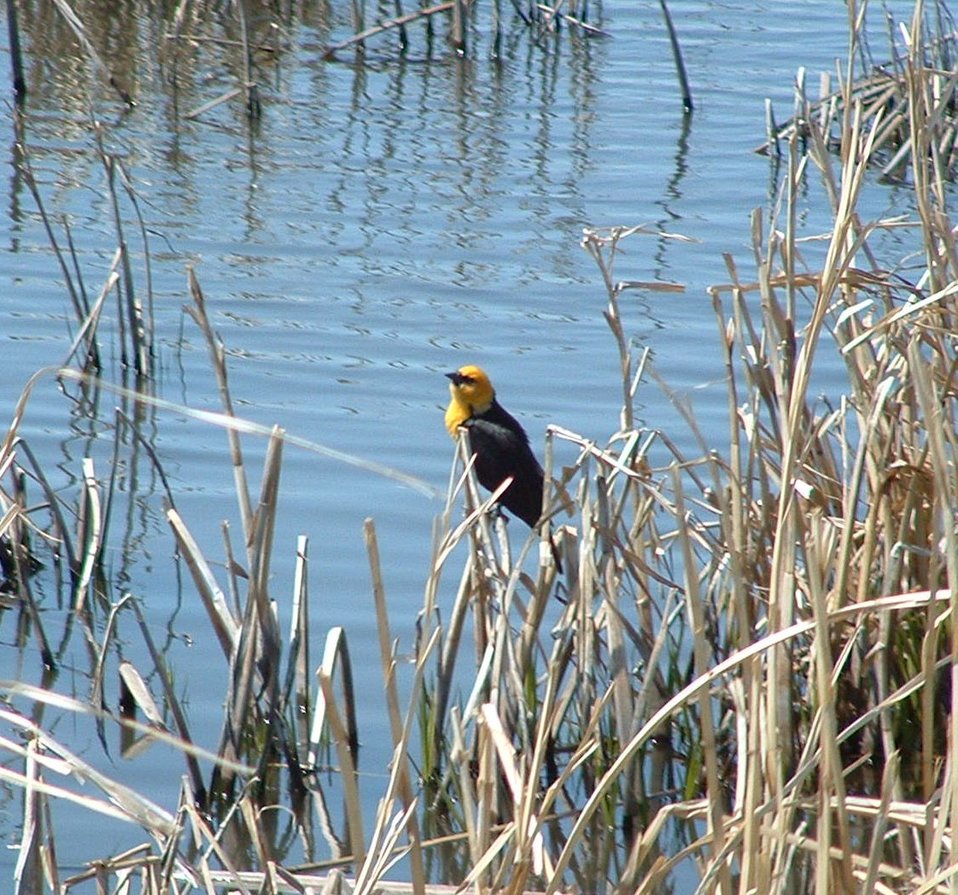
Yellow-headed Beauty

Yellow-headed blackbirds are very common in northeast South Dakota,where their strangled song can be heard from almost any wetland with cattails or other emergent vegetation.